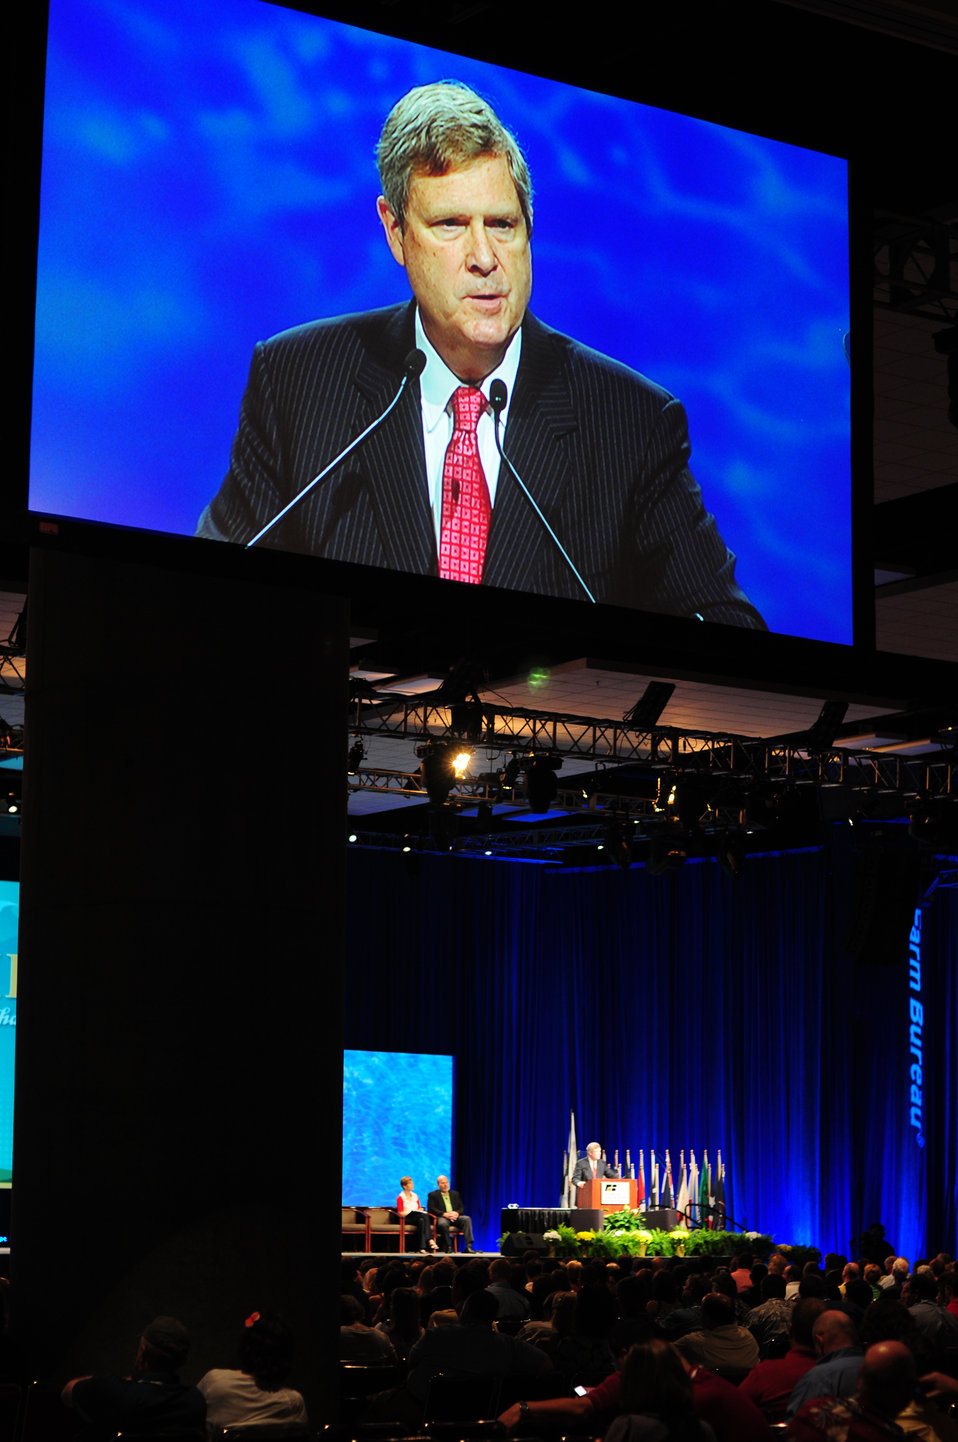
Agriculture Secretary Tom Vilsack speaks at the American Farm Bureau Annual Meeting Closing Ceremony at the Convention Center in Waikiki, Hawaii, on Sunday, January 9, 2012.